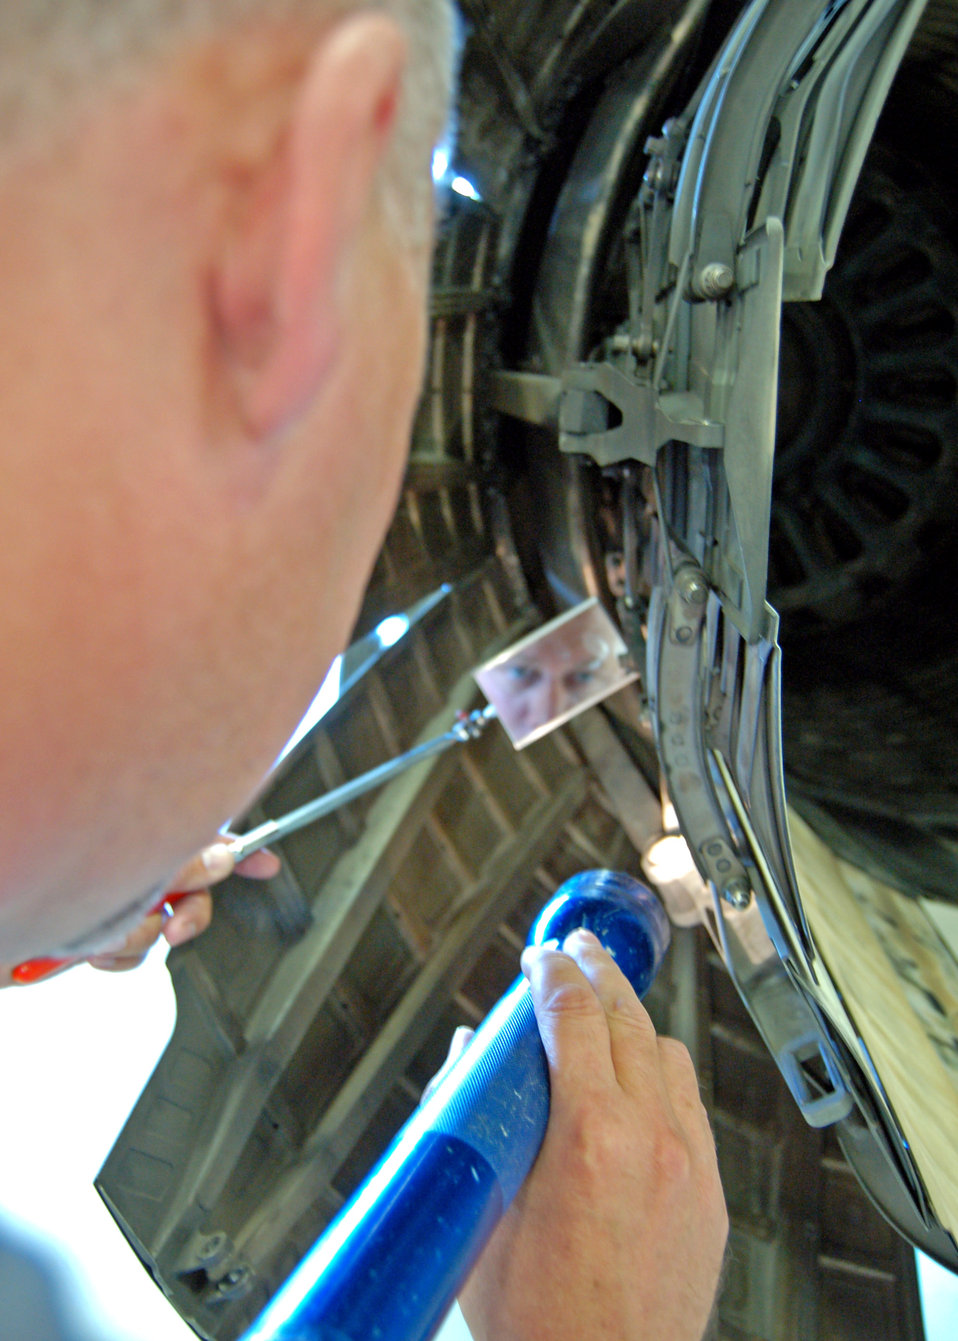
Propulsion shops work together, eliminate waste

Tech. Sgt. Kenny Prather inspects the exhaust nozzle on an F-16 Fighting Falcon engine at Hill Air Force Base, Utah. Sergeant Prather is an Air Reserve Technician at the 419th Fighter Wing. He is also a civilian employee of the shop and has 18 years of active-duty and Reserve experience.